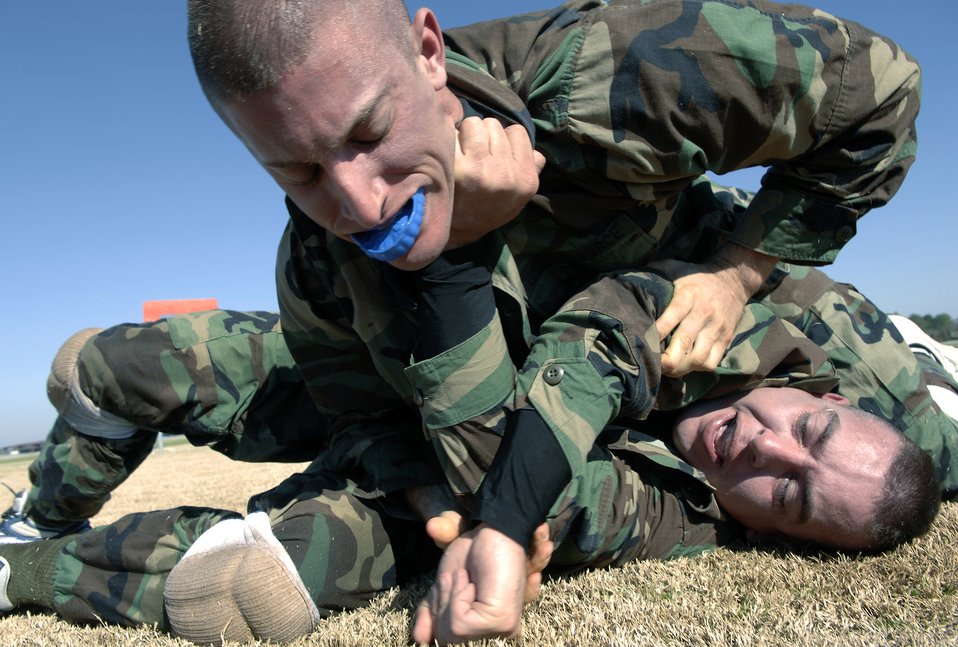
OTS begins new close combat course

Air Force officer trainees practice close-combat tactics Feb. 8 during the new Air Force Combative Program field exercise at the Officer Training School at Maxwell Air Force Base, Ala. All officer accession students are being given 11 hours of combative-skills training. Trainees learn ground fighting and basic jujitsu-style grappling moves to provide them with the confidence they need to defend themselves in combat situations.